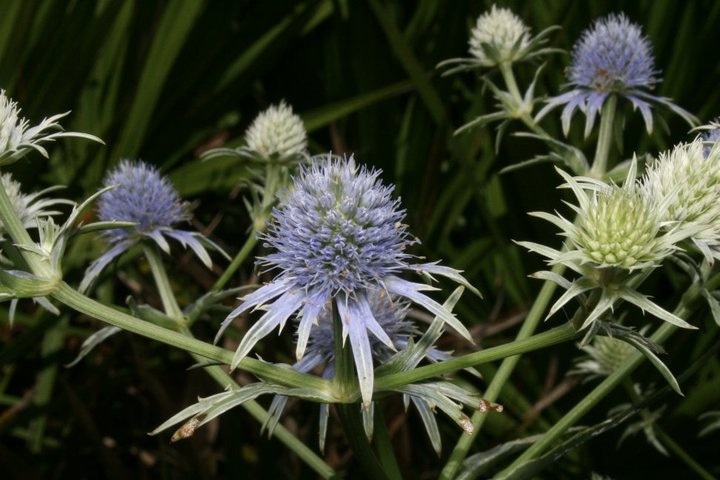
button snakeroot

St. Marks National Wildlife Refuge, FL